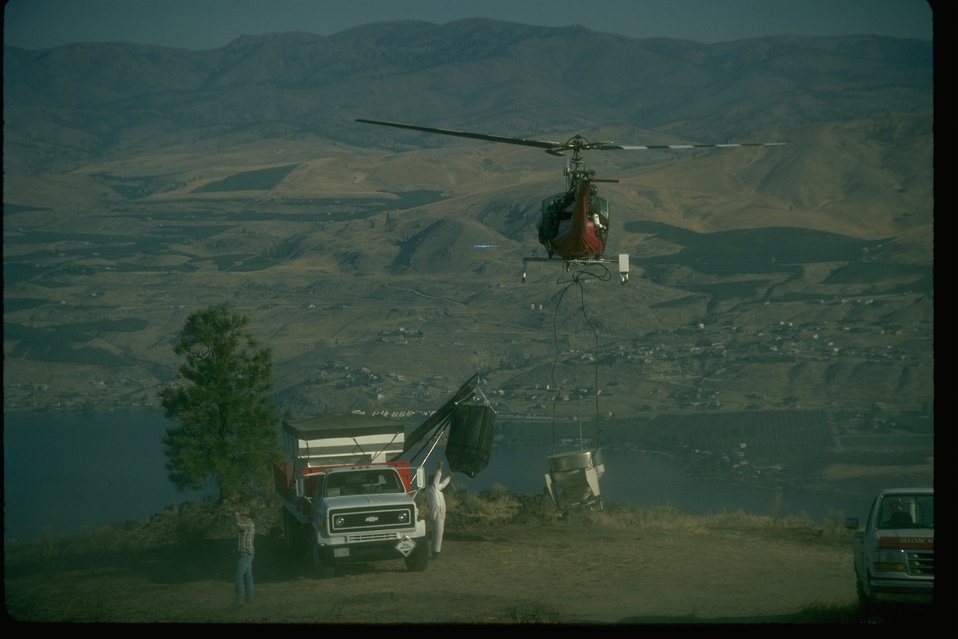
Helicopter spreads seeds to rehabilitate after fire in Chelan Butter.